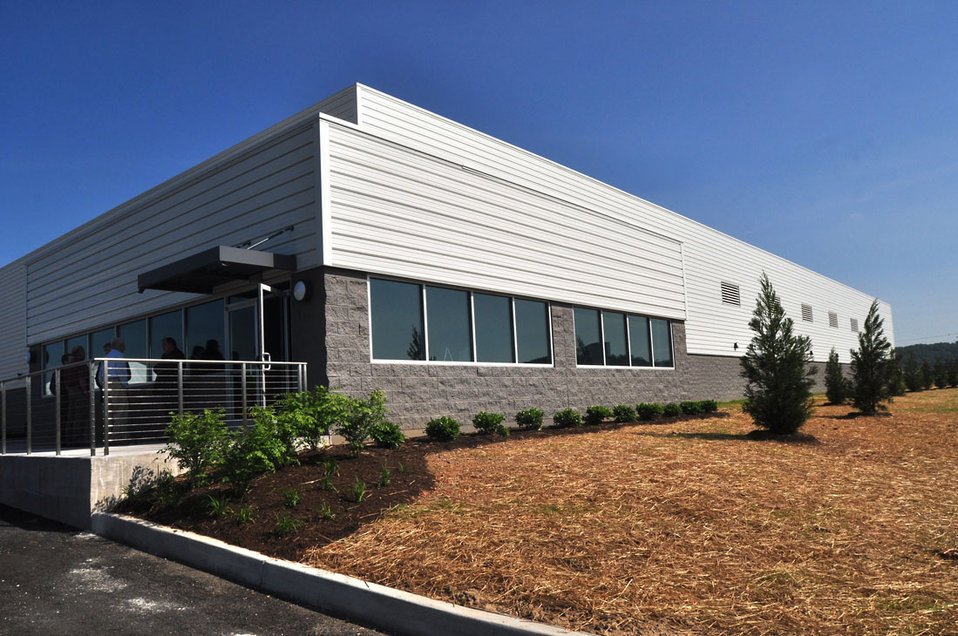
New construction at Oak Ridge